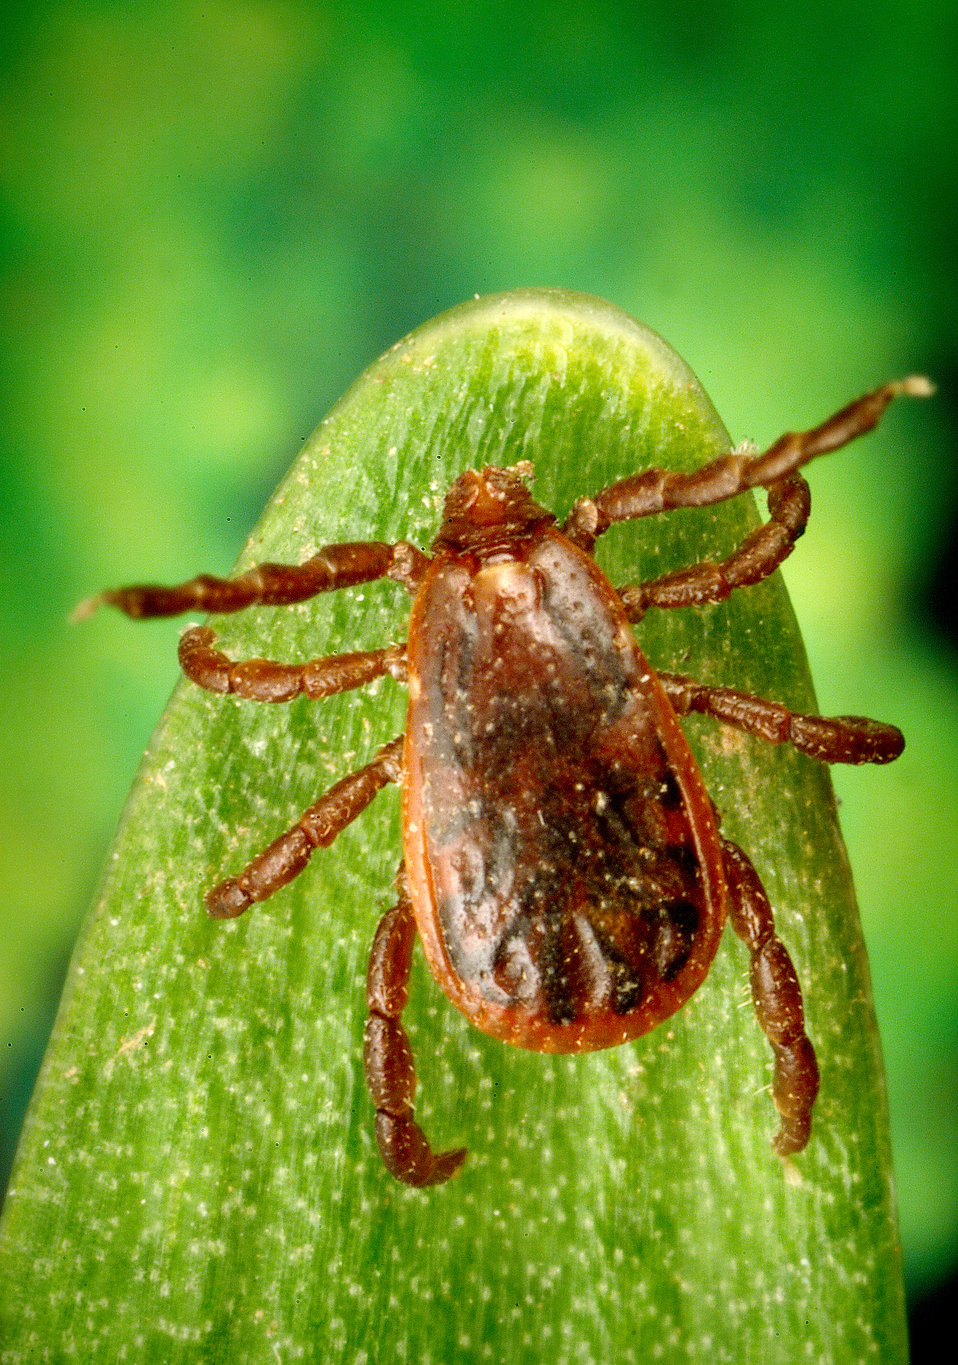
This 2005 image depicted a male 'brown dog tick', Rhipicephalus sanguineus from a superior, or dorsal view looking down on this 'hard tick's' scutum, or keratinized 'shield' which entirely covers its back, identifying it as a male. In the female, the dorsal abdomen is only partially covered, thereby, offering room for abdominal expansion when she becomes engorged with blood while ingesting her blood meal obtained from her host.Though not the primary vector for Rocky Mountain spotted fever (RMSF) like the 'American dog tick', Dermacentor variabilis, and the 'Rocky Mountain wood tick' D. andersoni, R. sanguineus has been found to be a less-common vector as well. This tick is distributed throughout the world. It also is known to transmit diseases to animals including canine babesiosis, bovine anaplasmosis, East Coast fever and Texas cattle fever. It can also spread tularemia, and tick-borne typhus to human beings.